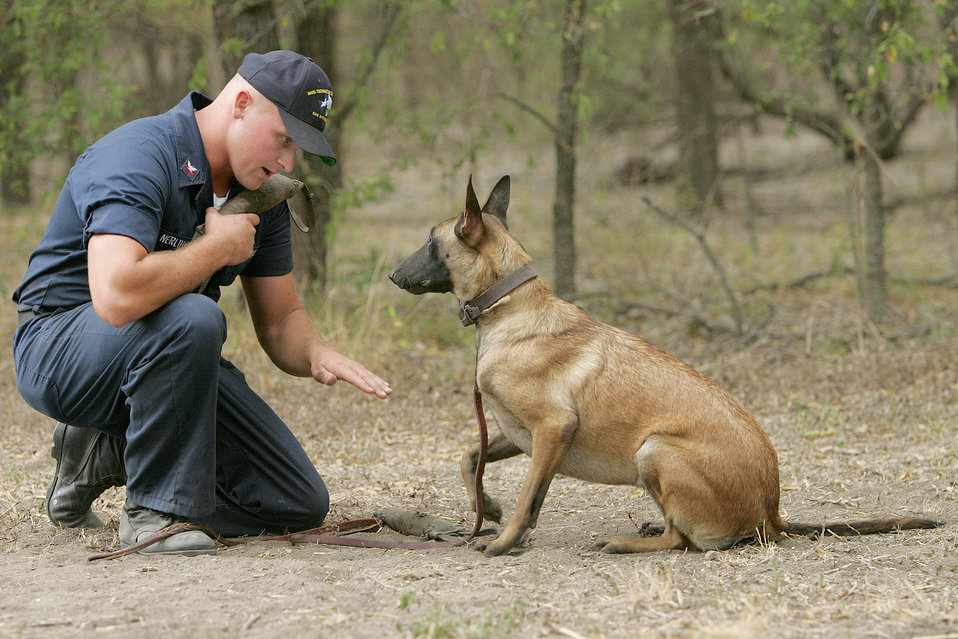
Total Force MWD training

Master At Arms 2nd Class David Nerling gives the hand command